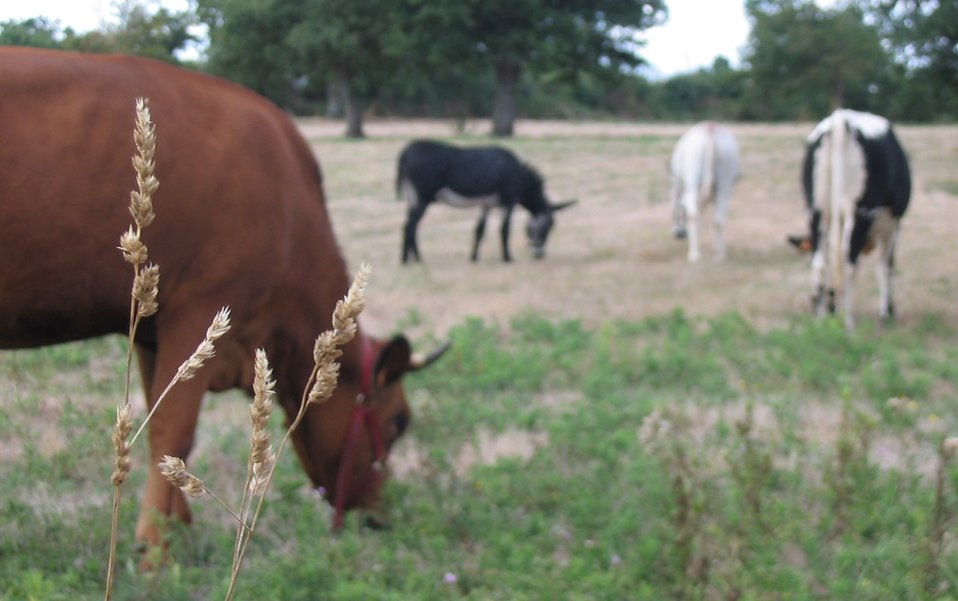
cirque joseph Bouglione à Brain-sur-longuenée (49)